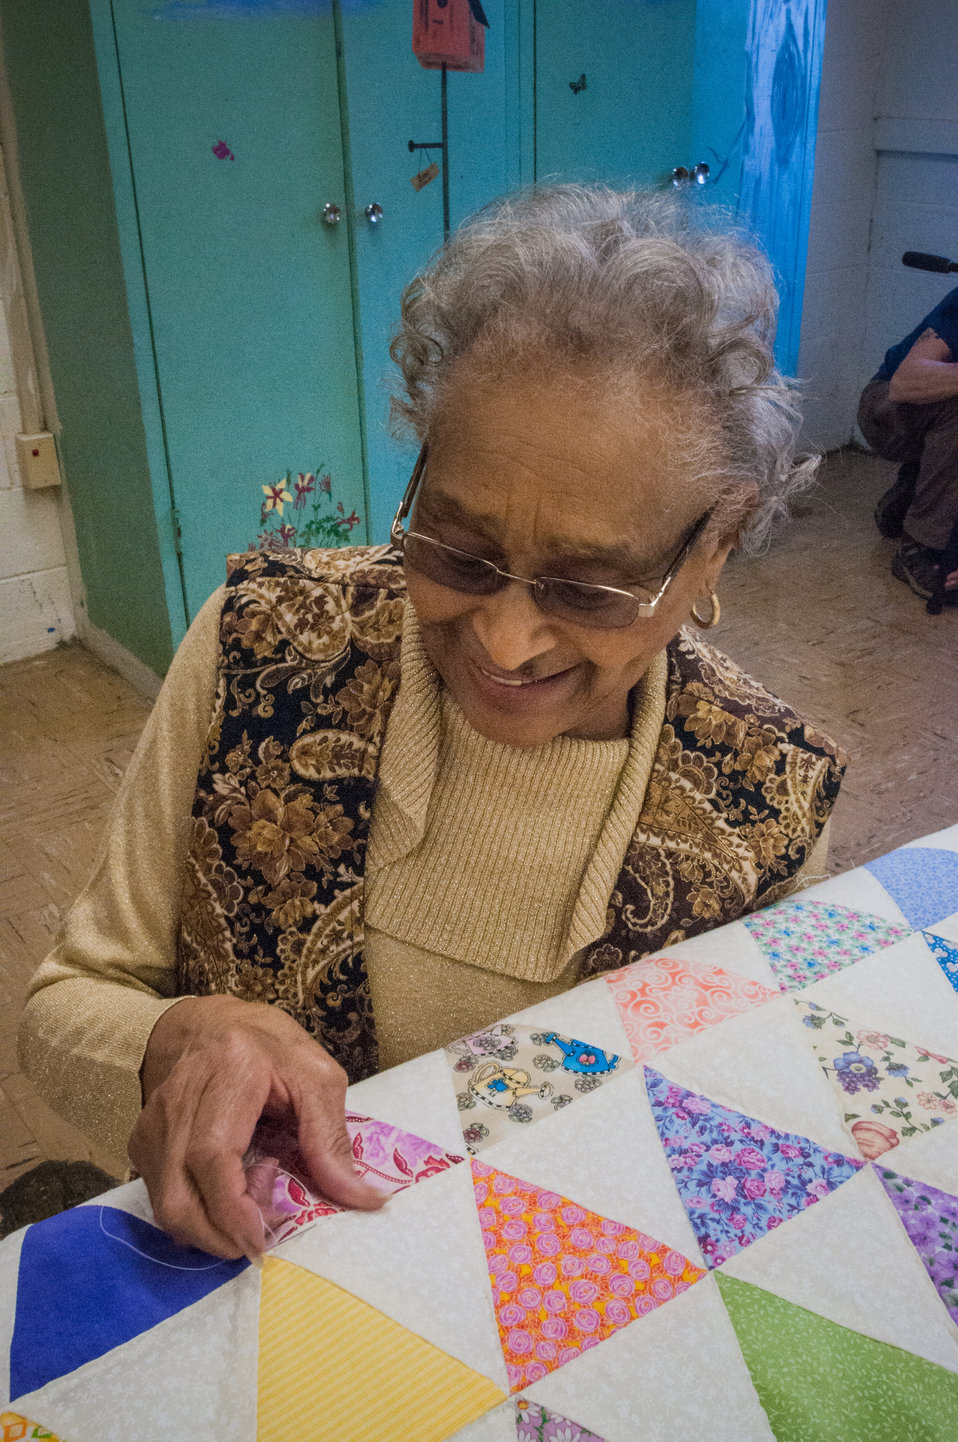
Mattie Vaughn works on a quilt for a King size bed at the East Baker Historical Society Community Center in Newton, Baker County, GA on Mar. 7, 2013. The East Baker Historical Society Community Center secured a U.S. Department of Agriculture (USDA) Rural Development (RD) Community Facilities (CF) Loan for the kitchen that enabled residents to prepare catered meals and to prepare and package food products. The USDA Strike Force Initiative has designated Baker County, GA as a Strike Force county selected to receive assistance to relieve persistent poverty in historically high-poverty counties.